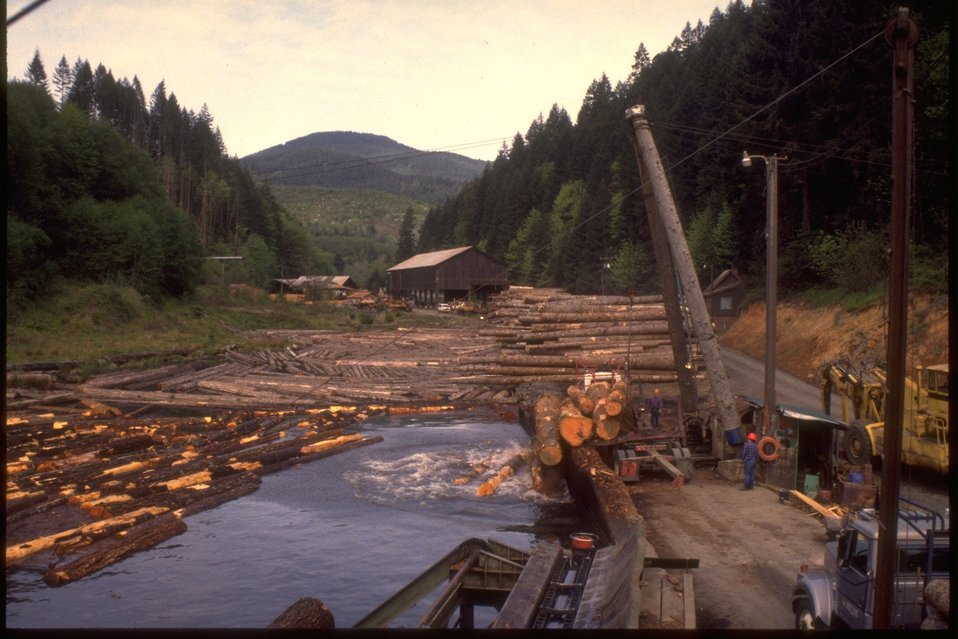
Logs being dumped into water for storage at the Hull Davis Lumber Mill.